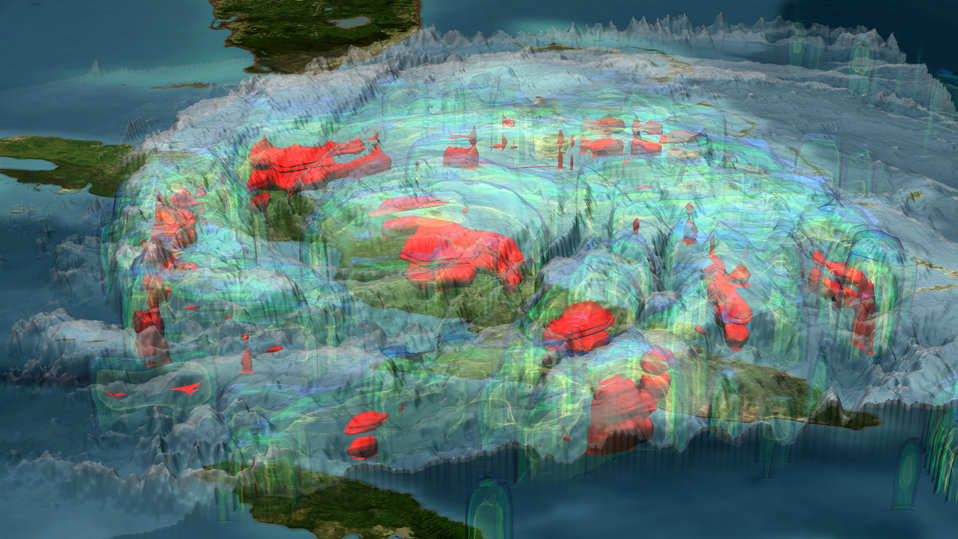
Hurricane Ike Slams Cuba at 7:04 EDT September 8, 2008